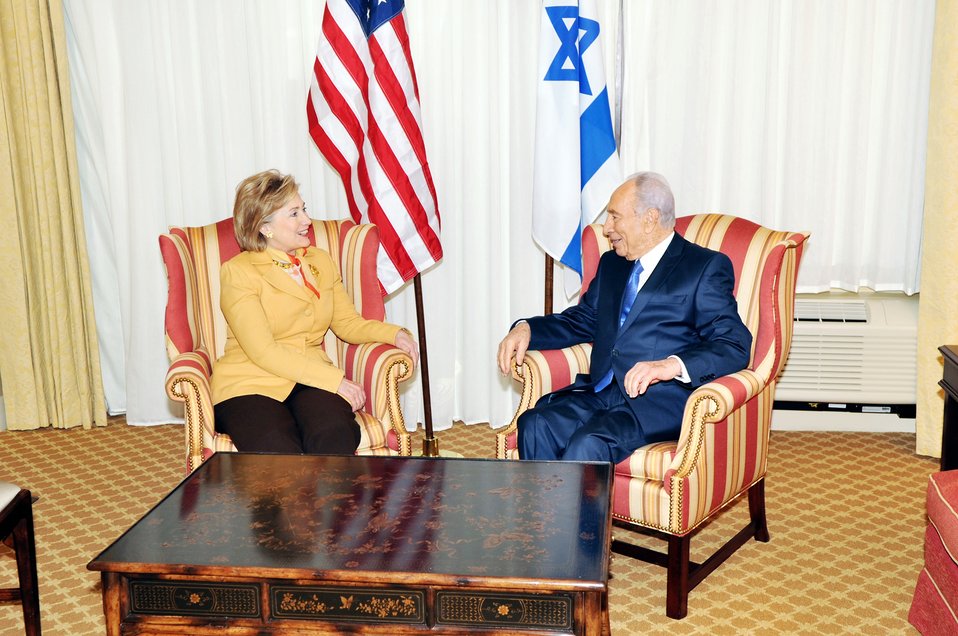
Secretary Clinton Meets With Israeli President

U.S. Secretary of State Hillary Rodham Clinton attends a bilateral meeting with President Shimon Perez of Israel at the Omni Shoreham Hotel in Washington, DC May 5, 2009.